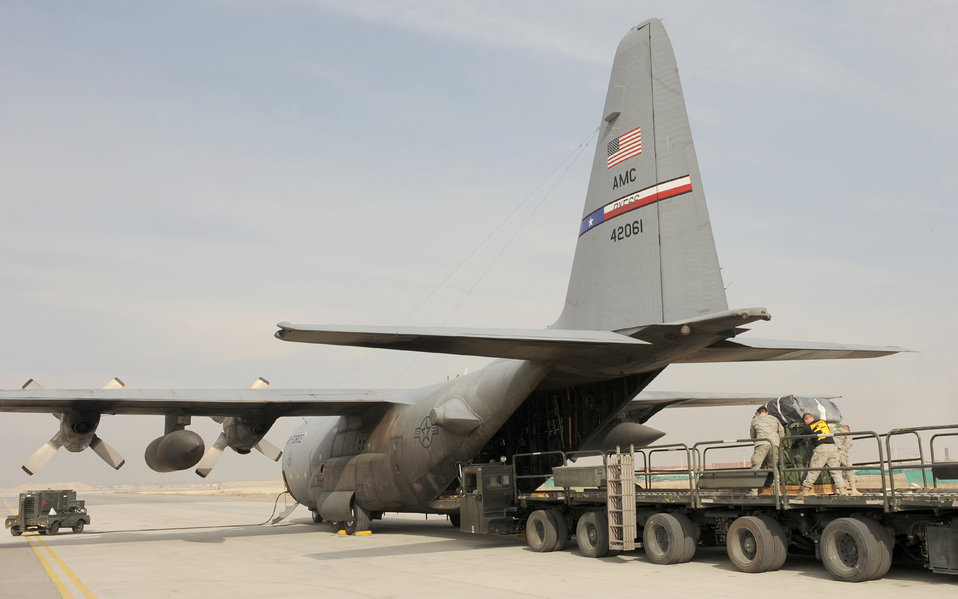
386th AEW members fly first airdrop missions in Afghanistan

Airmen and Soldiers help load container delivery system bundles into the back of a C-130 Hercules recently at Bagram Air Field, Afghanistan. A crew from the wing's 737th Expeditionary Airlift Squadron flew an airdrop mission in Afghanistan and dropped more than 22,000 pounds of supplies to ground troops Nov. 21, 2010, validating the wing's ability to perform airdrop missions in support of Operation Enduring Freedom.